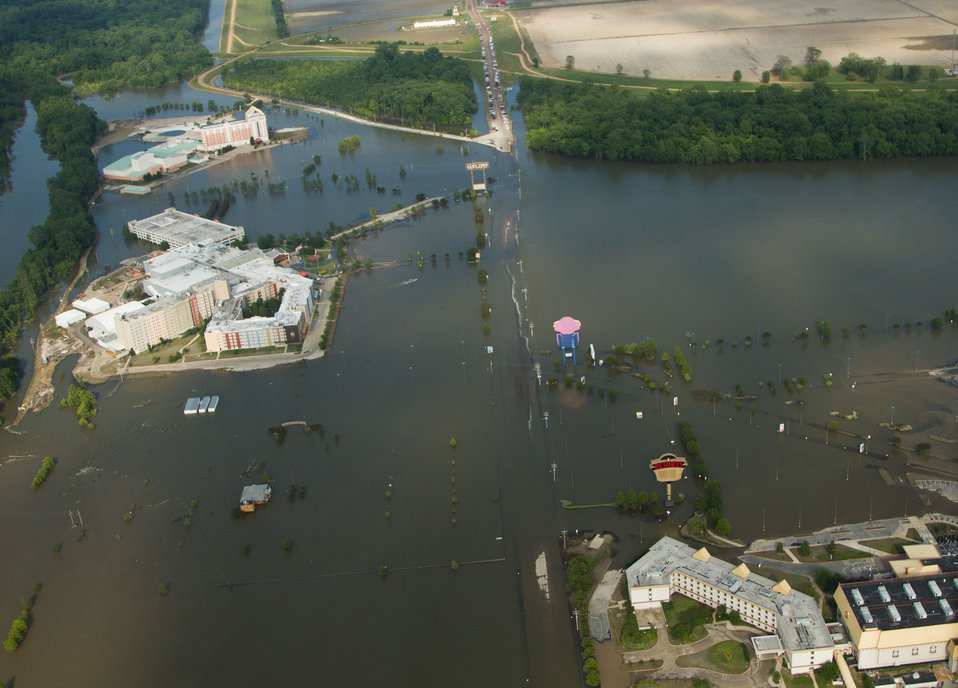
Aerial view of some of the casinos in Tunica, MS. Surrounded by flood waters from the Mississippi River, on Thursday, May 19, 2011. Aerial platform was a UH-60 Blackhawk commanded by Col. Kennedy and his flight crew from the Army Aviation Support Facility #1 at Hawkins Field in Jackson.